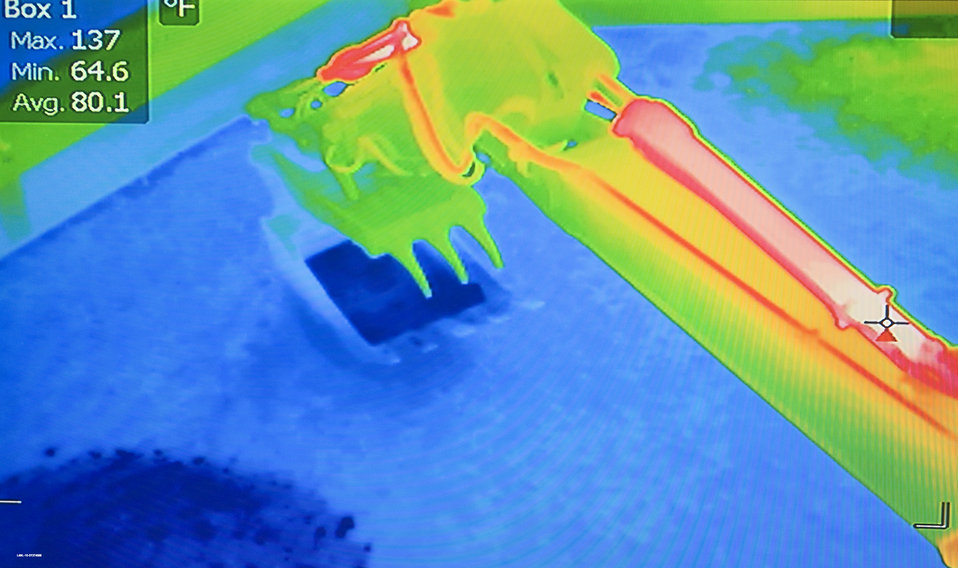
LANL Infra-red equipment

Each of the 13 digging enclosures at LANL’s World War II landfill has its own remote control room. Controllers have access to sensors, video, and infra-red equipment, and can trigger fire suppression systems if necessary.